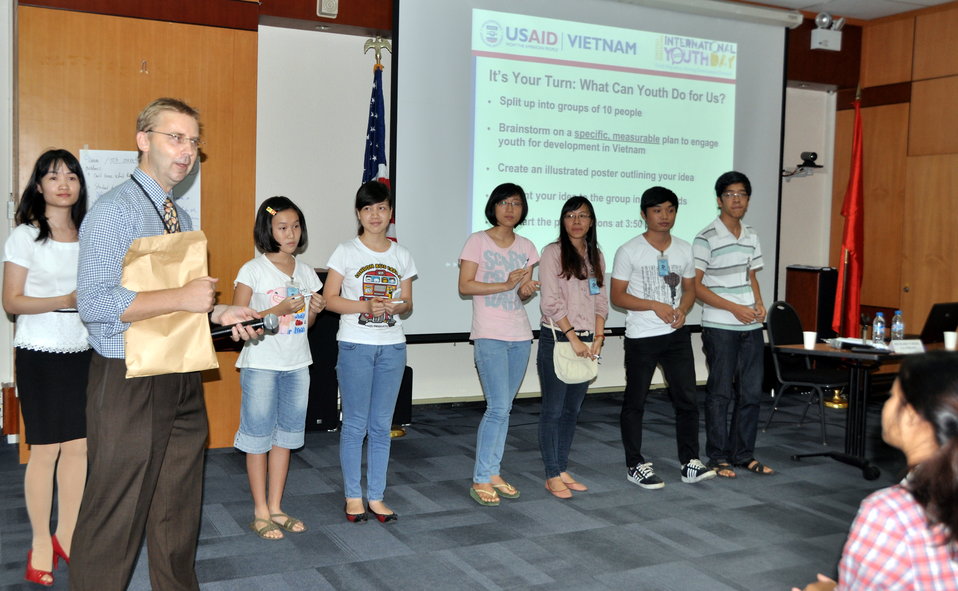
International Youth Day 2013: USAID hosts a lively discussion and group exercise on how youth can join in to advance development

Hanoi, August 12, 2013.